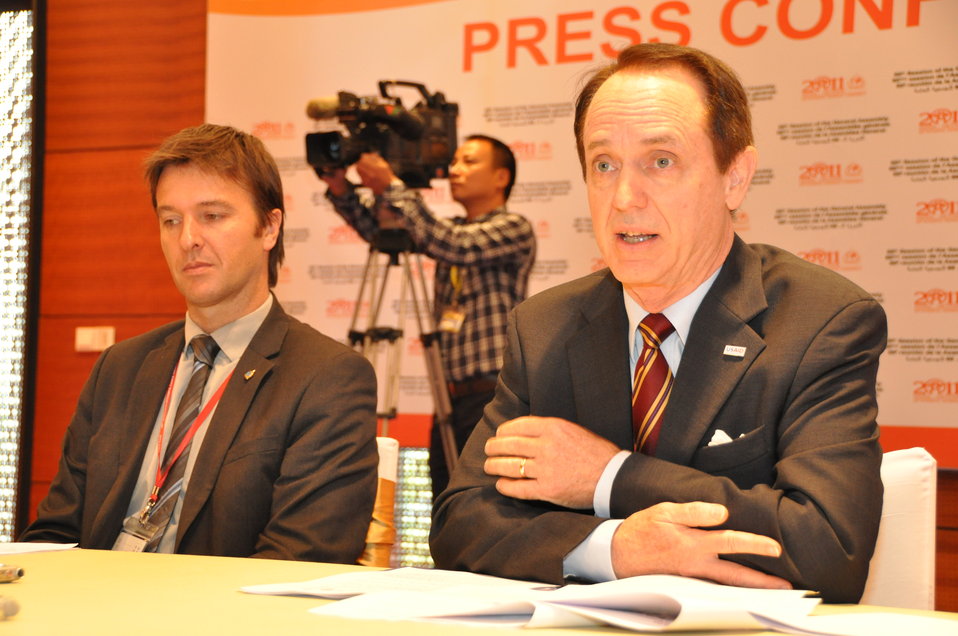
USAID Mission Director Francis Donovan at the INTERPOL General Assembly in Hanoi, November 2011

Project Predator, an initiative to protect and save the world's last surviving wild tigers, was unveiled today at the 80th INTERPOL General Assembly, a gathering of global law enforcement support from the organization's 190 member countries.

Created by INTERPOL, Project Predator unites the efforts of police, customs and wildlife officials in the 13 countries in Asia where wild tigers can still be found. This new partnership under the Global Tiger Initiative brings together officials from the 13 tiger range countries, the U.S. Agency for International Development (USAID), the UK's Department for Environment, Food and Rural Affairs (Defra), the World Bank, the Smithsonian Institution and INTERPOL.